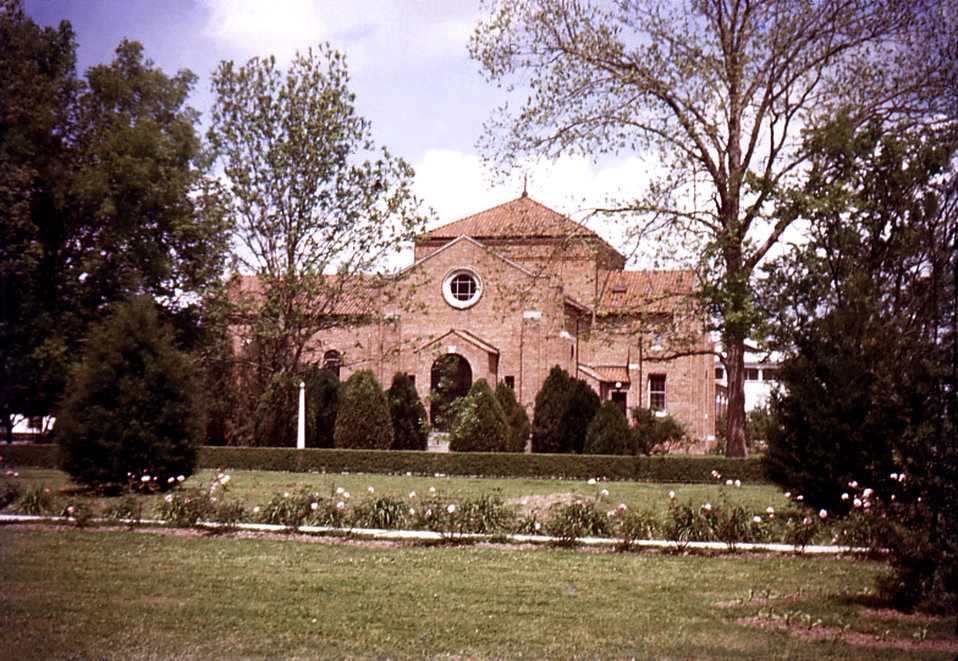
This was a photograph that depicted the Catholic chapel on the grounds of the Carville, Louisiana Leprosarium, where seventy-five percent of the Carville patients were Catholics. Mass was held every morning, and twice on Sundays. "Patients of the U.S. Marine Hospital in Carville, Louisiana, produced a set of 35 mm slides around 1950 from which this image was derived. In 2002, a patient's son donated the set, the only one known in existence, to the museum. The father, a patient at Carville for several years, brought these slides home around 1950 to give his family a snapshot of life at the national leprosarium. The act of quarantining patients for leprosy (HD) remained law in the state of Louisiana until 1957."